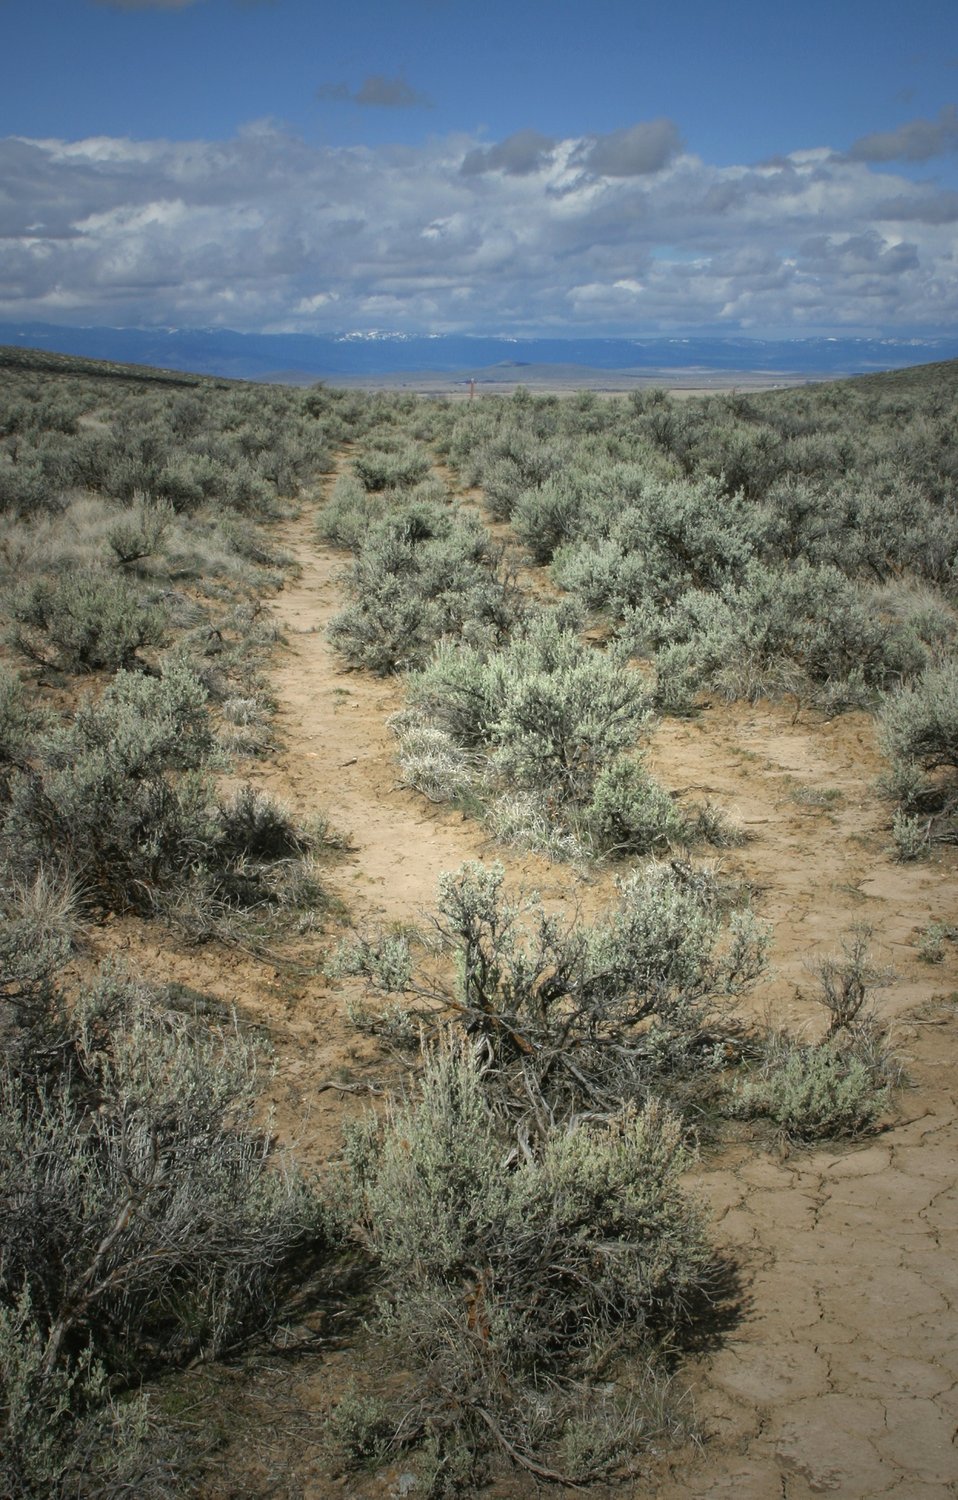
Oregon Trail ruts below the National Historic Oregon Trail Interpretive Center.